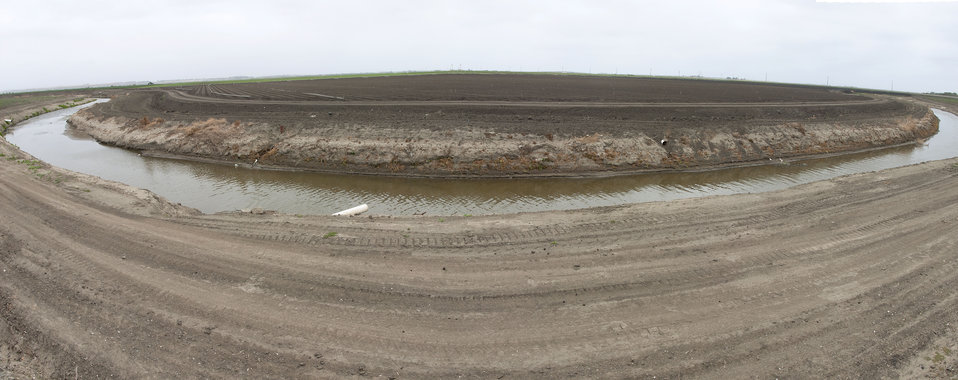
(Virtual panorama) A grower in the Monterey Bay area that uses conventional sprinkler irrigation and water drainage methods on Thursday, June 16, 2011.